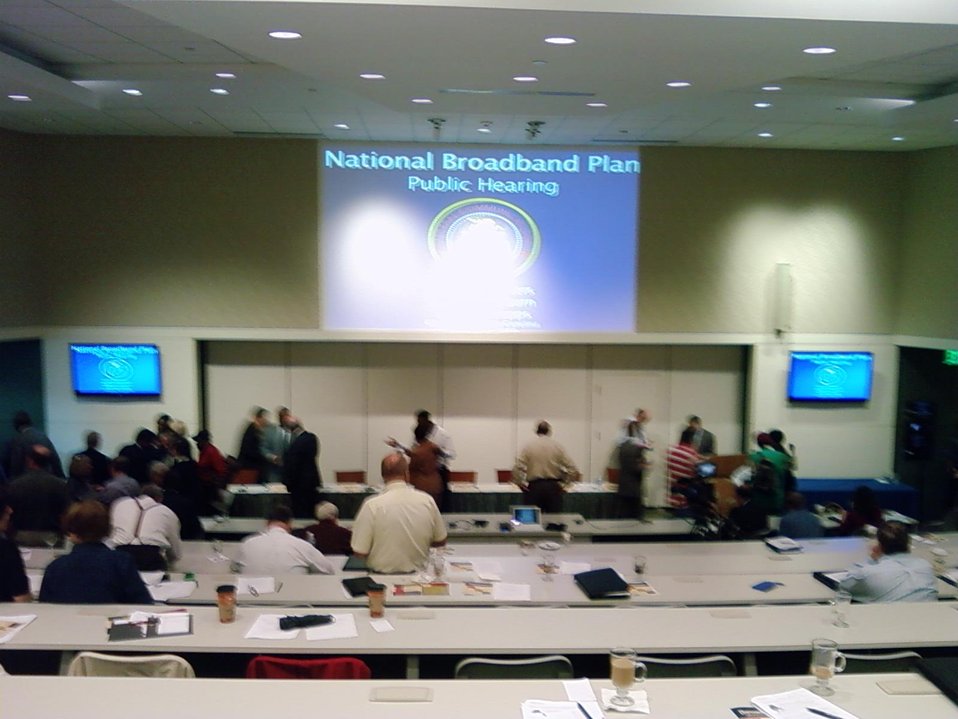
SC event 18

Broadband Field Hearing, in Charleston, South Carolina. 10-06-09